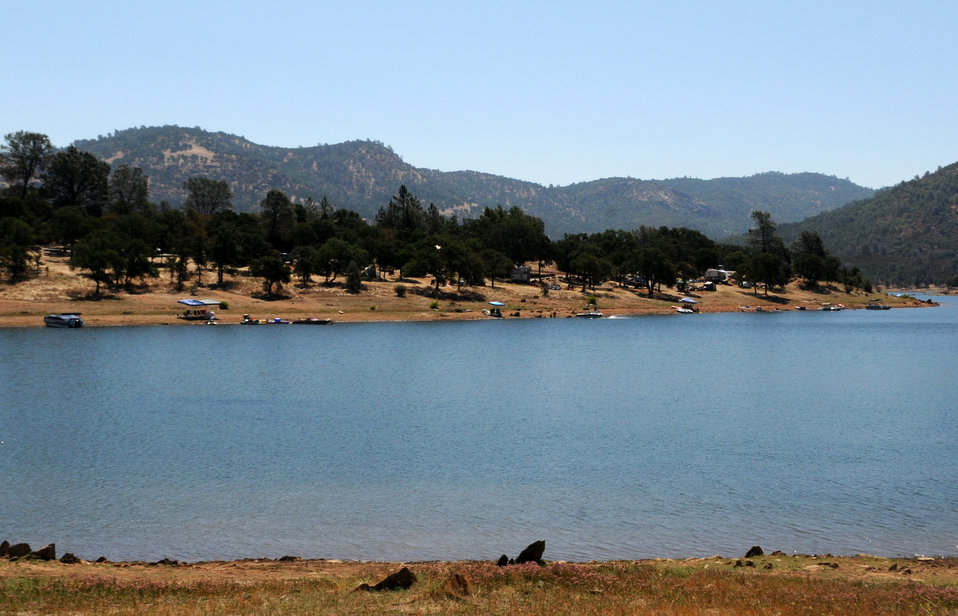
New Hogan Lake and Dam, Calaveras County, Calif.

A view of New Hogan Lake near Valley Springs, Calif., July 8. The 4,400 surface acre lake is located in the oak and brush-covered foothills of the Sierra Nevada Mountains and was created in 1964 with the completion of New Hogan Dam.

When full, the lake has 50 miles of shoreline and extends nearly eight miles upstream to the confluence of the north and south forks of the Calaveras River. The lake includes several campsites, boat ramps and other recreational activities open to the public.